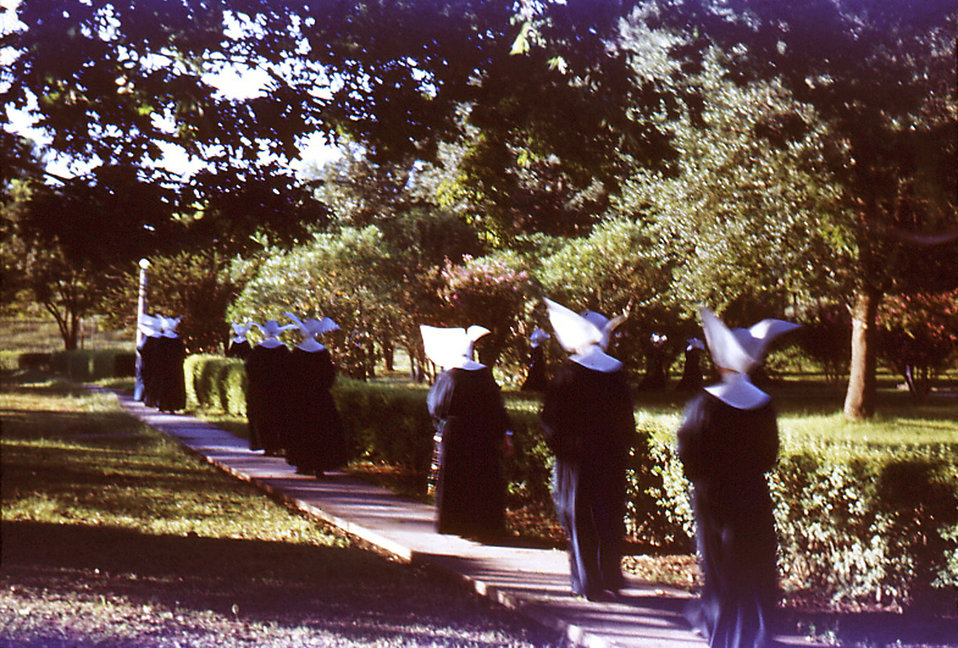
This was a procession of Sisters as they were going to work at the Carville Leprosarium. These diligent women were up at 4am everyday, in order to attend 6am mass, followed by breakfast at 7am. After their morning meal, they were off to begin working at the leprosarium's infirmary. The first group of four Sisters of the order founded by St. Vincent de Paul, and officially named Daughters of Charity, arrived at Carville, April 27, 1896, with Sister Beatrice Hart in charge. The sisters volunteered their services, in order to nurse the sufferers of leprosy who'd sought help at the leprosarium.